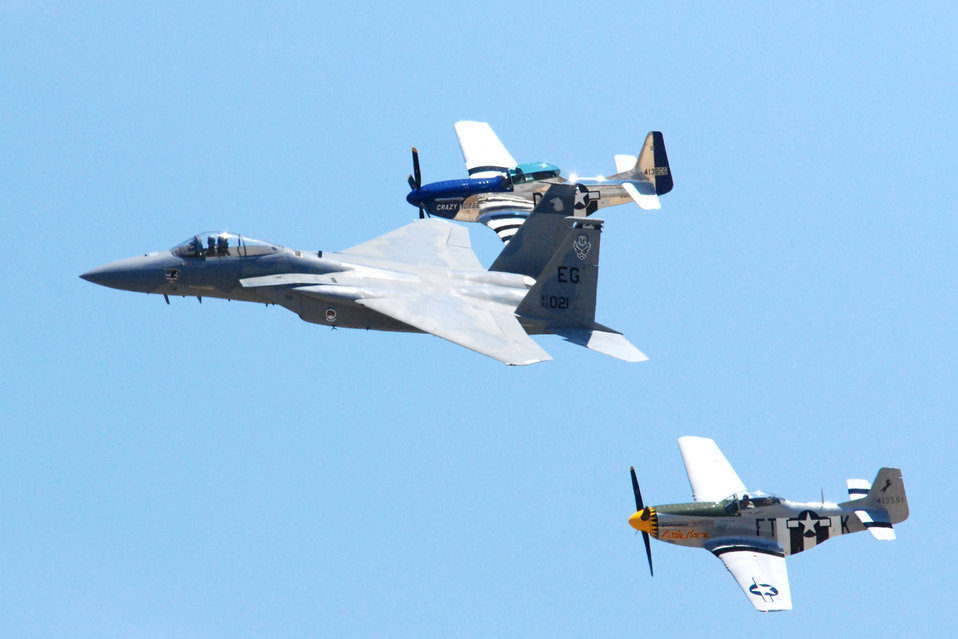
Heritage flight

The F-15 Eagle West Coast Demonstration Team and a pair of P-51 Mustangs fly in formation as part of the Heritage Flight during their final demonstration May 1 at Eglin Air Force Base, Fla. The Air Combat Command F-15 demo team has performed more than 150 times to spectators around the globe over the final two years. This is the final demonstration for the F-15C, completing a 26-year career that began in 1983.